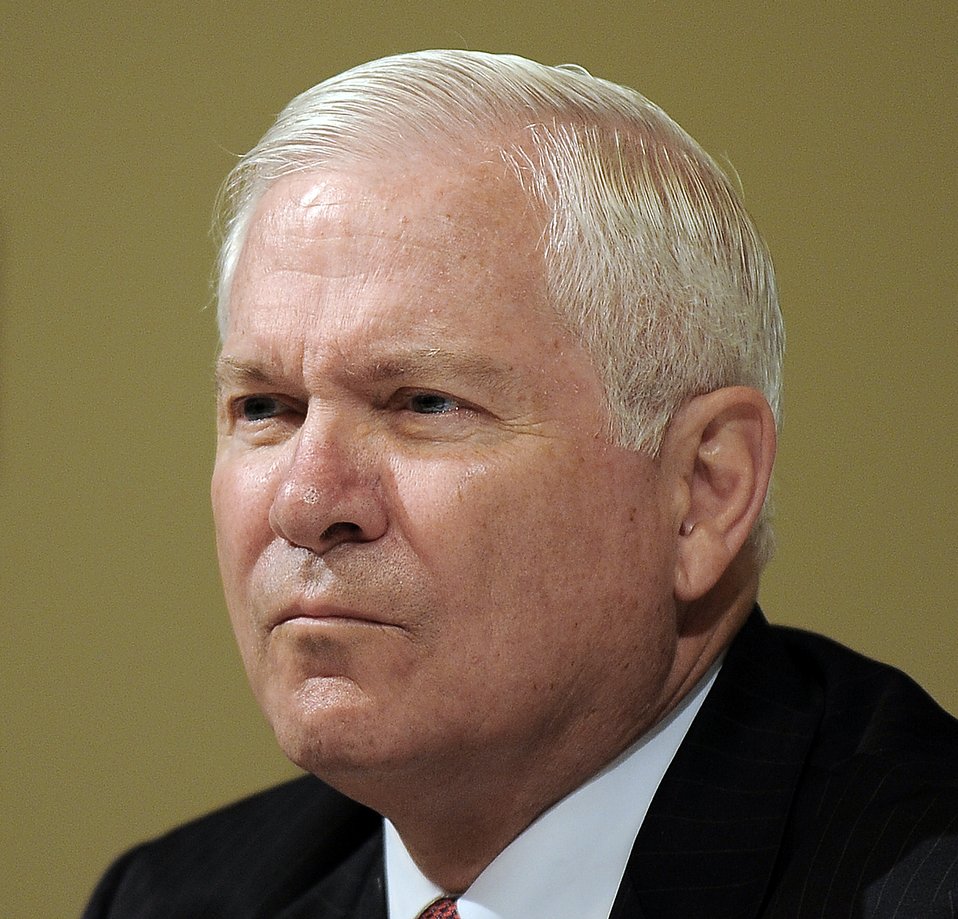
Defense Secretary Gates Travels

Secretary of Defense Robert Gates waits for his introduction at the International Institute for Strategic Studies Shangri-La Dialogue security conference in Singapore May 30.